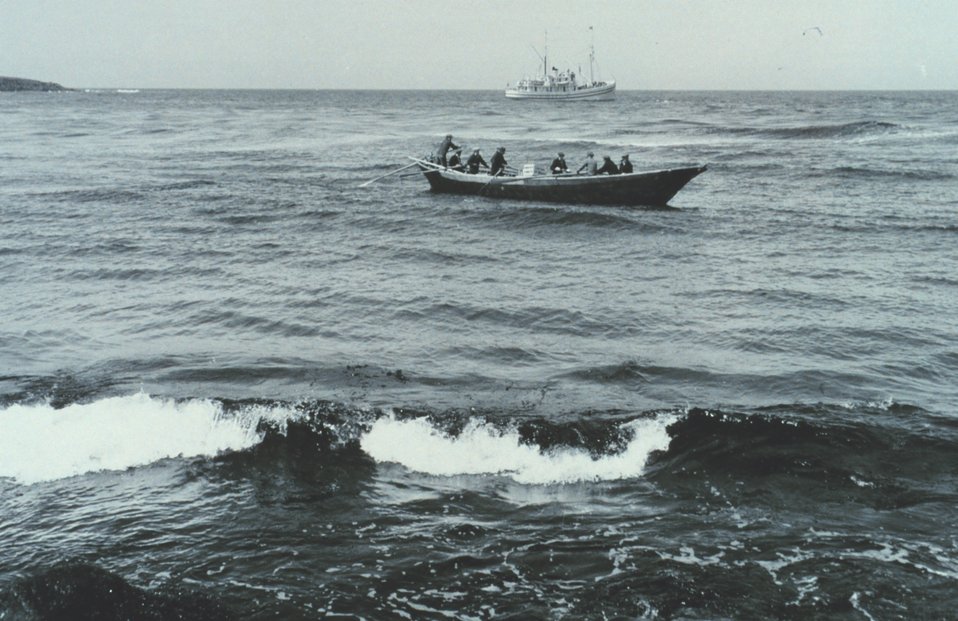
A bidarrah or large skin boat off St. George Island. The Bureau of Commercial Fisheries vessel PENGUIN is in the background. F&WS 10,030.